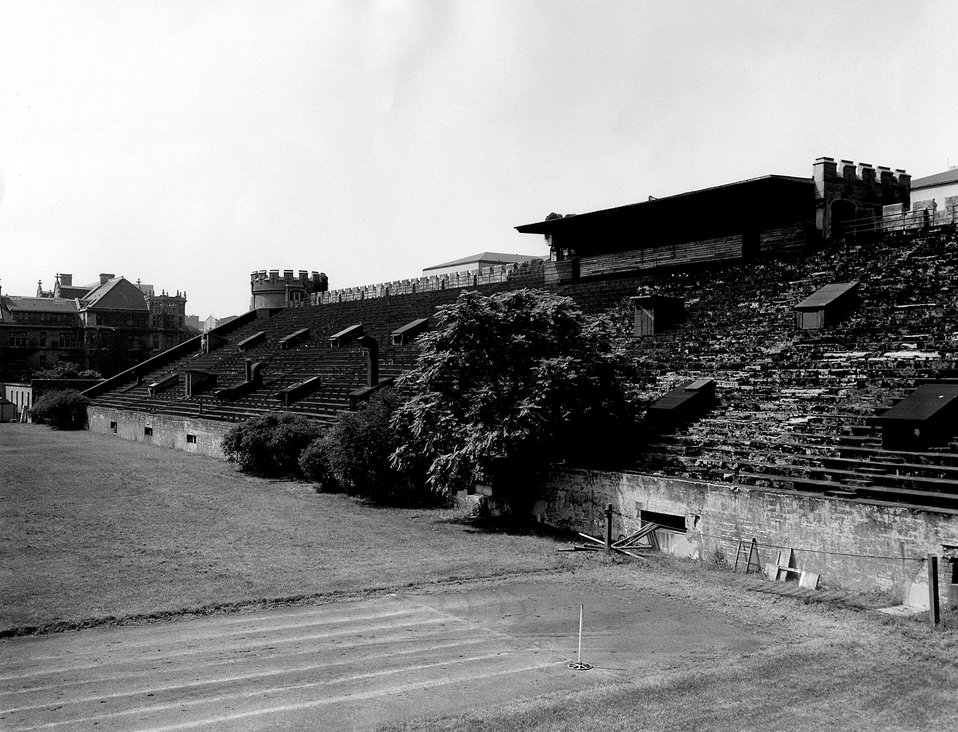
General view of the West Stands of Stagg field as photographed from the playing field.